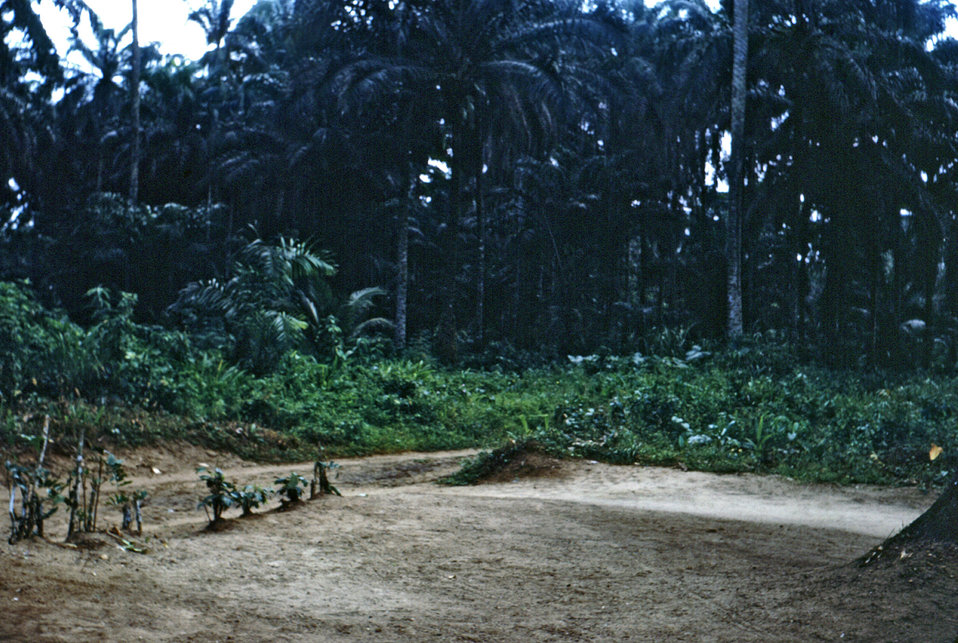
This 1968 photograph showed the landscape outside of an eastern Nigeria refugee relief camp, which was set up during Nigerian-Biafran civil war.